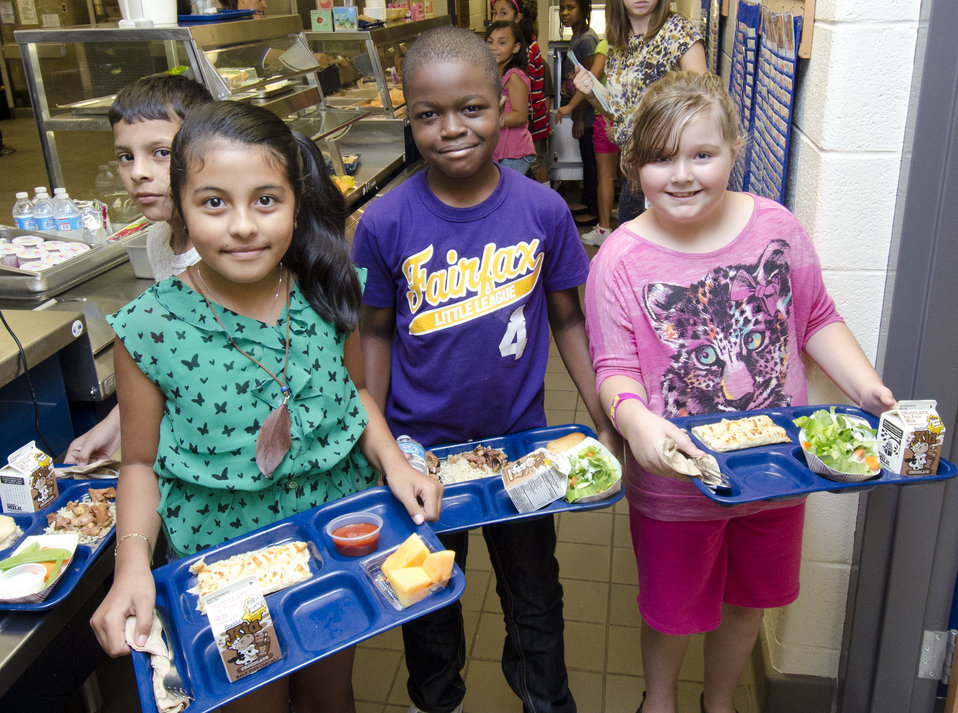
School lunch staff and students enjoy the new school lunch menu created to meet the new standards at the Yorkshire Elementary School in Manassas, VA on Friday, Sept. 7, 2012.